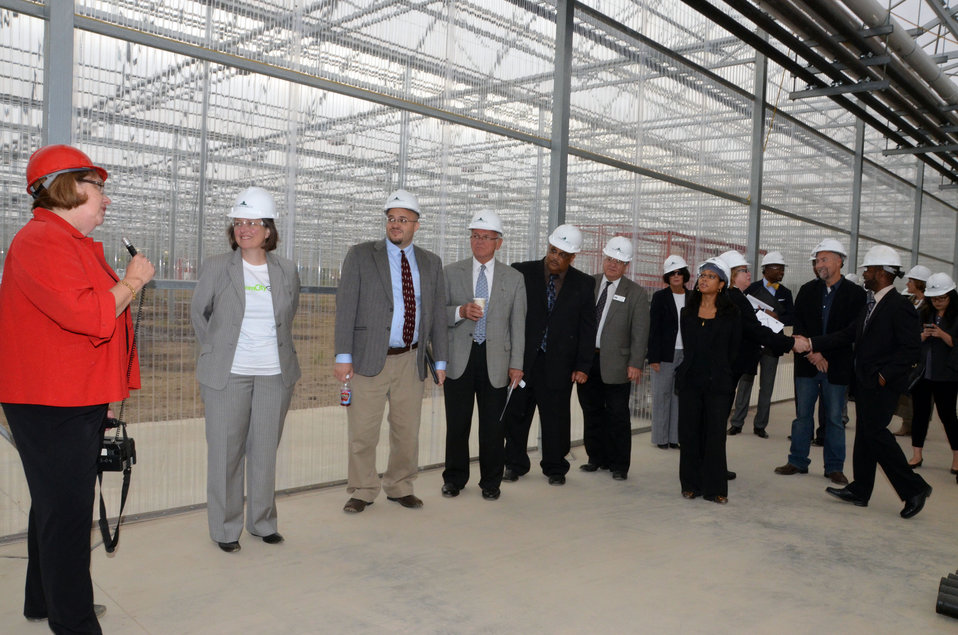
Mary Donnell (left), CEO, Green City Growers Cooperative provides an overview of the future plans for the cooperative's greenhouse, in Cleveland, Ohio, which is currently under construction and scheduled to open in November 2012. U.S. Agriculture Deputy Secretary Kathleen Merrigan, (second from left), was a guest speaker during the Sept. 21, 2012 tour in Cleveland, Ohio.